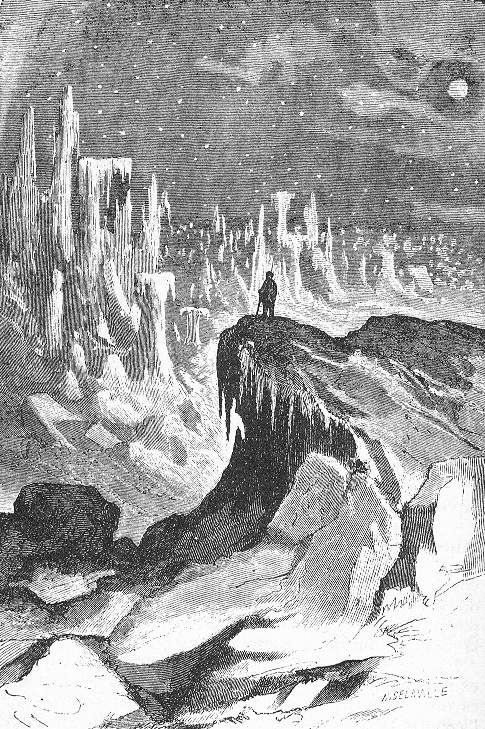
An illustration from Jules Verne's novel 'Journeys and Adventures of Captain Hatteras', part I: 'The English at the Noth Pole' drawn by Édouard Riou and/or Henri de Montaut. Polski: Ilustracja powieści Juliusza Verne'a 'Podróże i przygody kapitana Hatterasa', części I: 'Anglicy na Biegunie Północnym' autorstwa Édouarda Riou i/lub Henri de Montauta. Français : Jules Verne: 'Voyages et aventures du capitaine Hatteras - Les Anglais au Pôle Nord', Édouard Riou et Henri de Montaut.